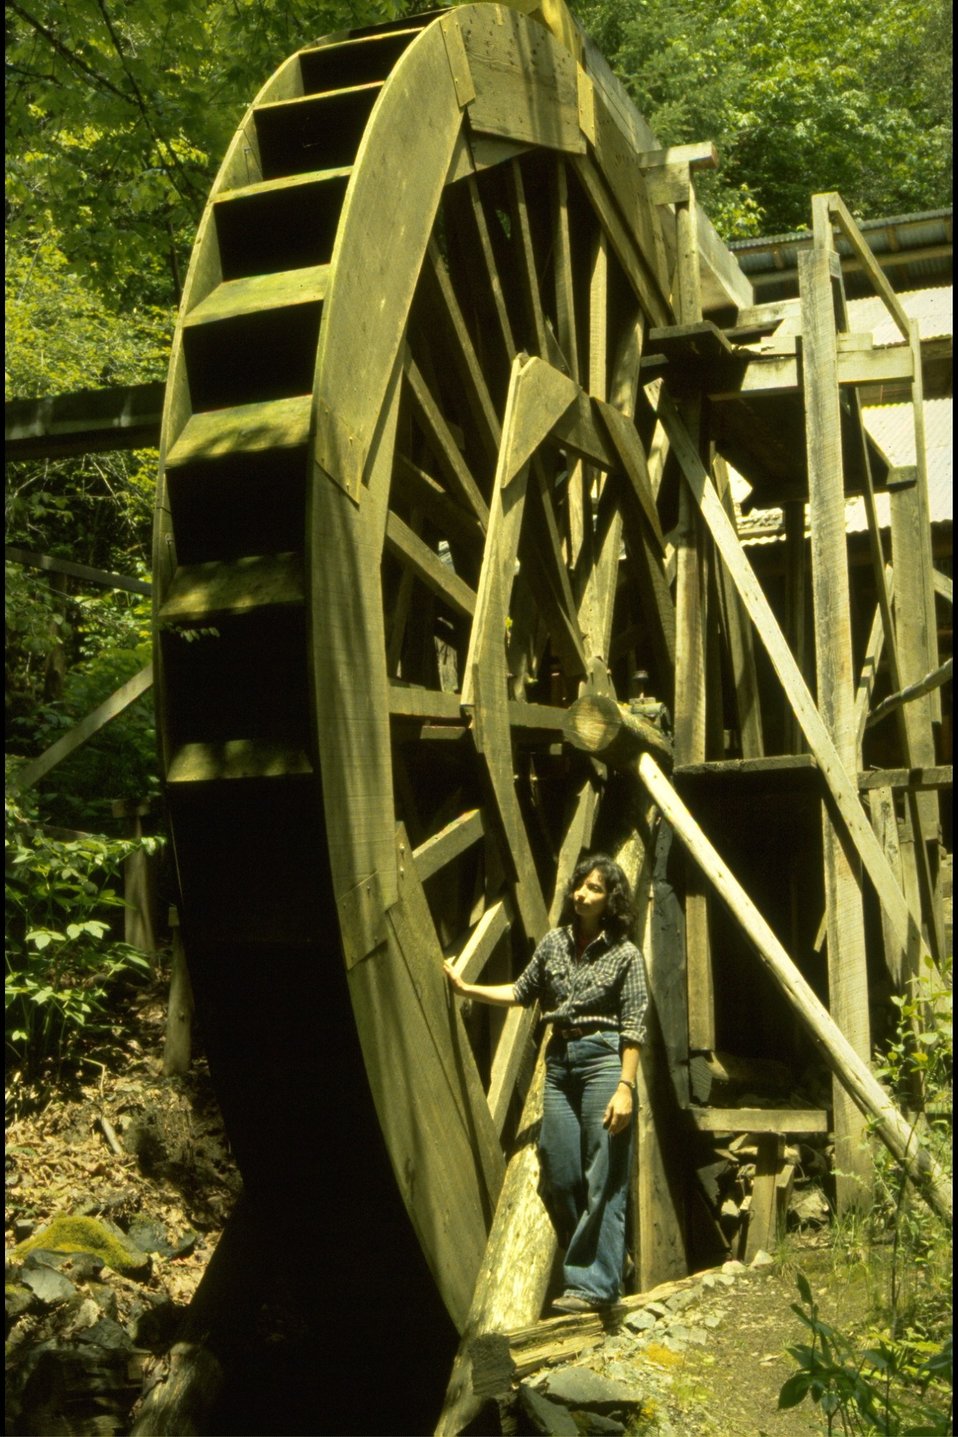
Rogue River - Water Wheel.